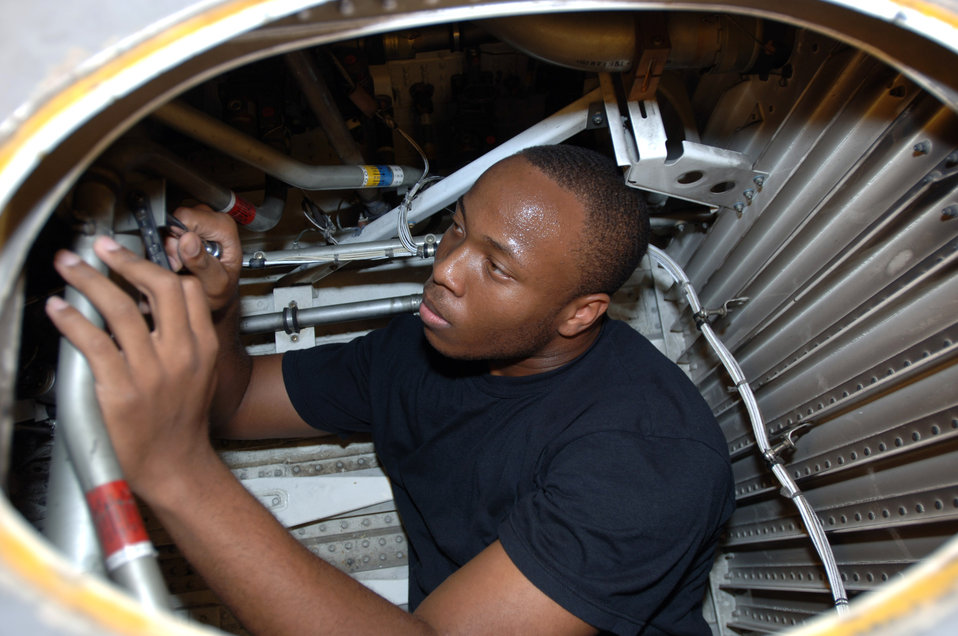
A tight fit

In the confined wing bay of a C-130 Hercules at Balad Air Base, Iraq, Senior Airman Jimmy Clanton checks fuel manifolds and valves Sept. 26 for potential leaks. Fuel specialists are responsible for fixing leaks, changing components and performing operational checks.